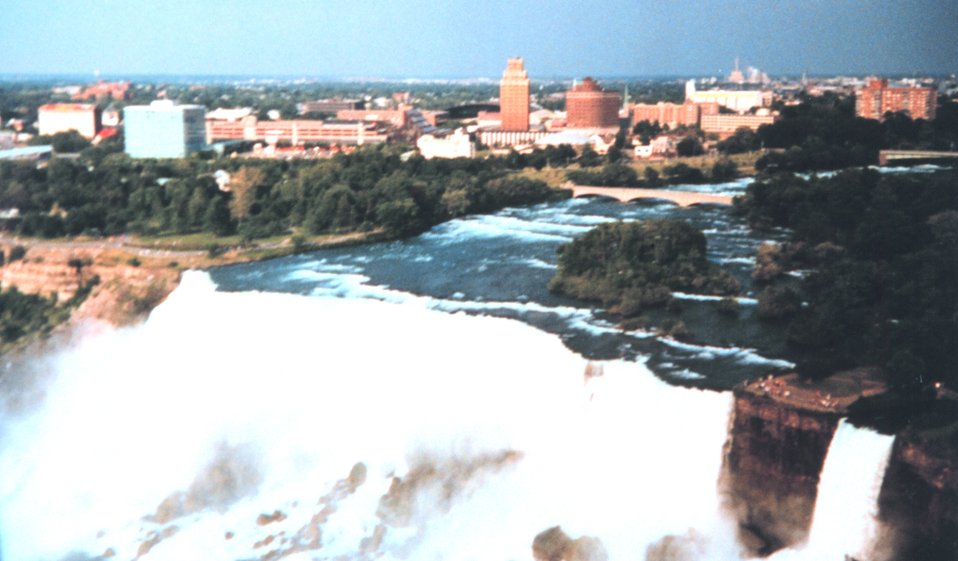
Niagara Falls as seen during Shoals Lidar survey of Niagara River.